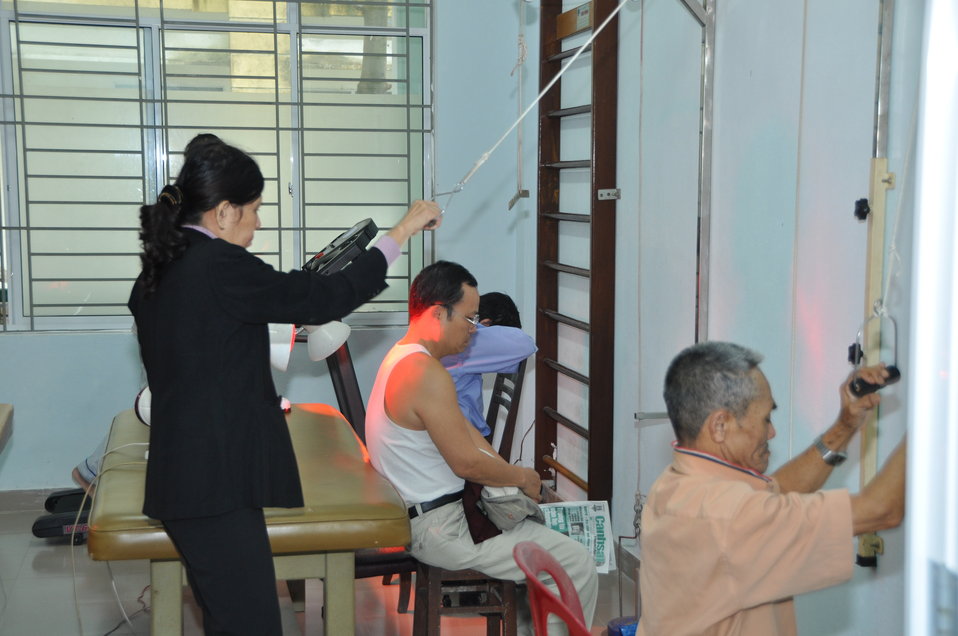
USAID support to Thanh Khe District Hospital

USAID-supported equipment and training help the staff at Thanh Khe District Hospital to meet the physical therapy needs of the disabled population of Danang.